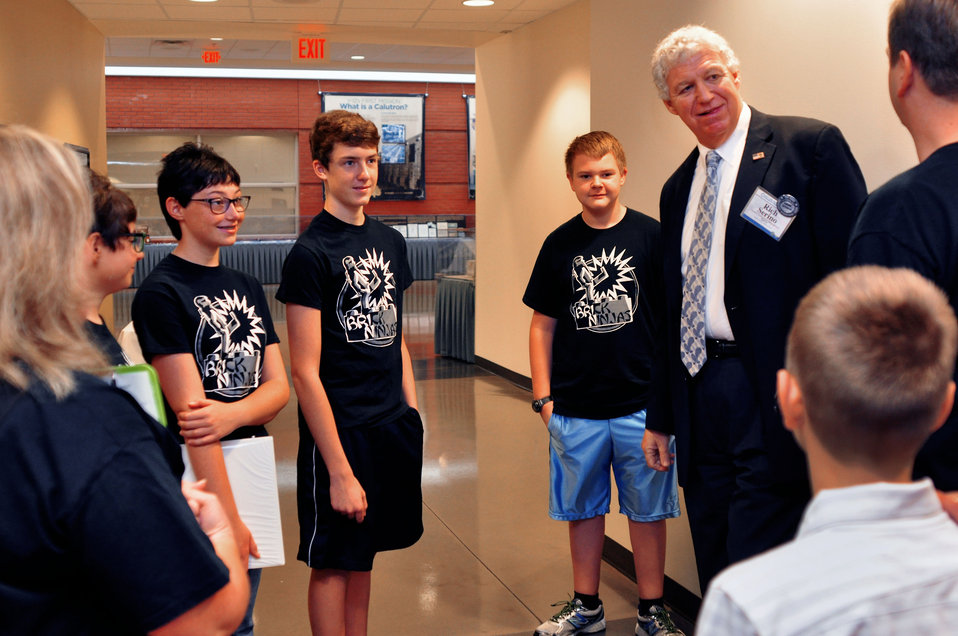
Richard Serino Deputy Administrator, FEMA Visits with Lego Champs Brick Ninjas in Oak Ridge 2013

13-116-355 DOE photo Lynn Freeny 9-26-2013 Oak Ridge Tennessee